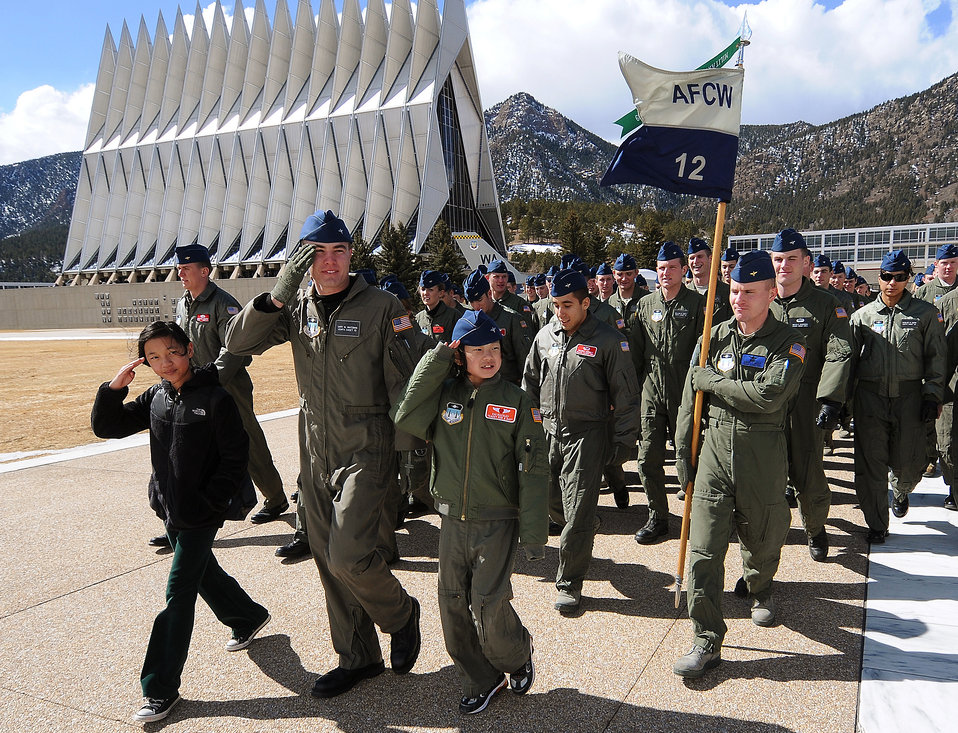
Academy cadets host cadet for a day

Lily Rackley, Cadet 1st Class Gary Whiteman and Cadet for a Day Kai Rackley salute during the noon meal formation at the U.S. Air Force Academy March 5, 2010. Other events during the Rackley family's visit included a tour of the Cadet Chapel and chemistry labs and a chance to try out flight simulators. Cadet Squadron 12 hosted the family for the two-day event.